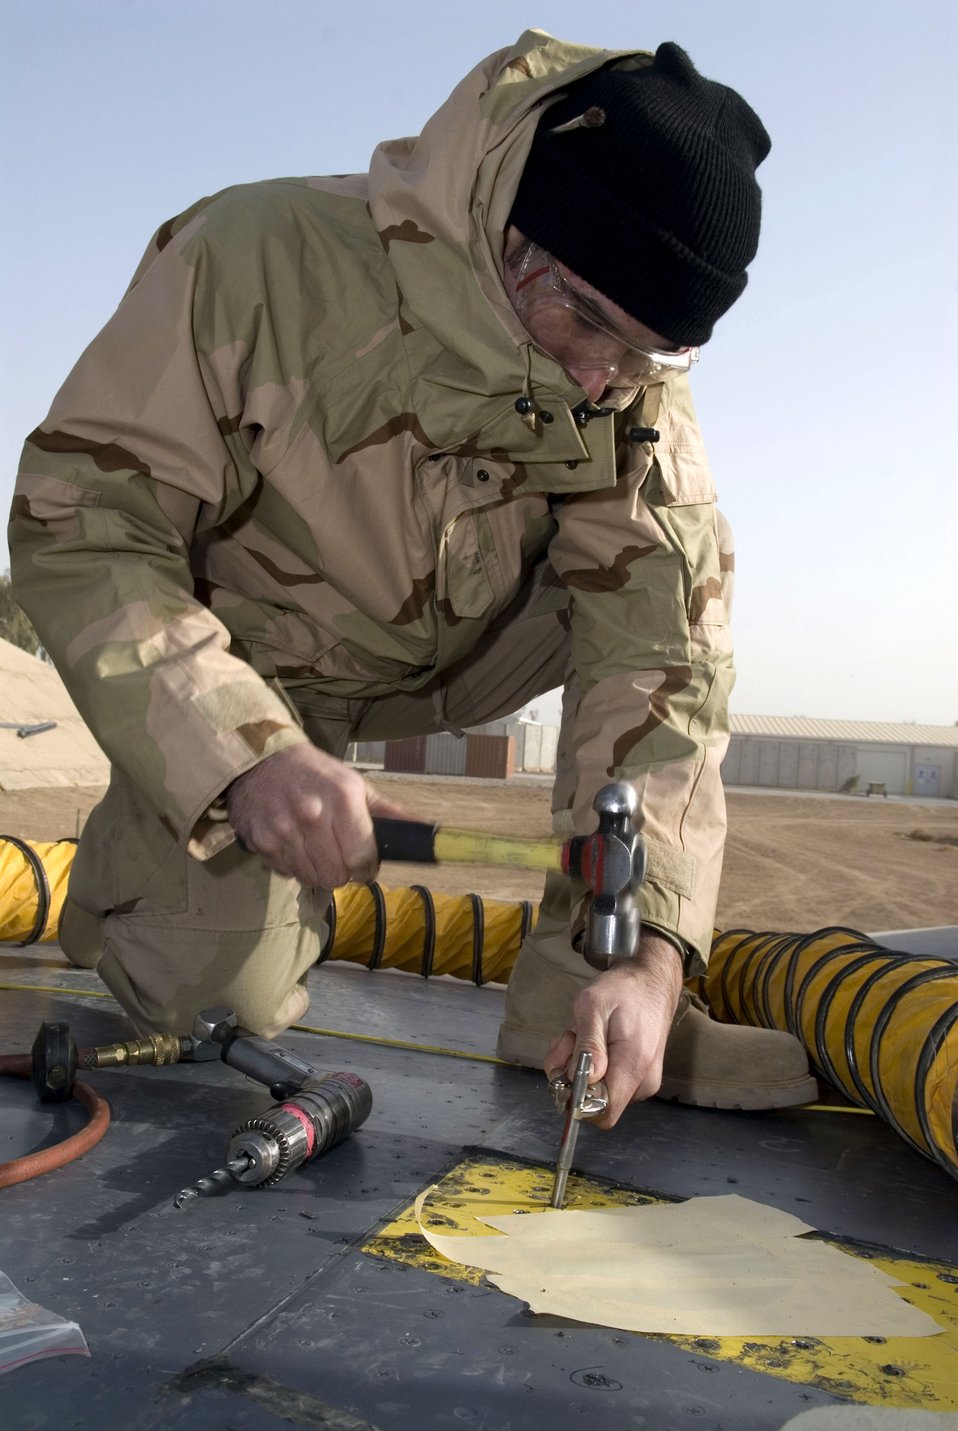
Nuts and bolts

Airman 1st Class Bradley Giroux hammers out a faulty nut on an F-16 Fighting Falcon's Davis Elliptical fastener Dec. 22 at Balad Air Base, Iraq. The fastener is a self-locking, self-sustaining device that holds multiple bolts in place. Airman Giroux, a 332nd Expeditionary Maintenance Squadron sheet metal technician, is deployed from Spangdahlem Air Base, Germany.